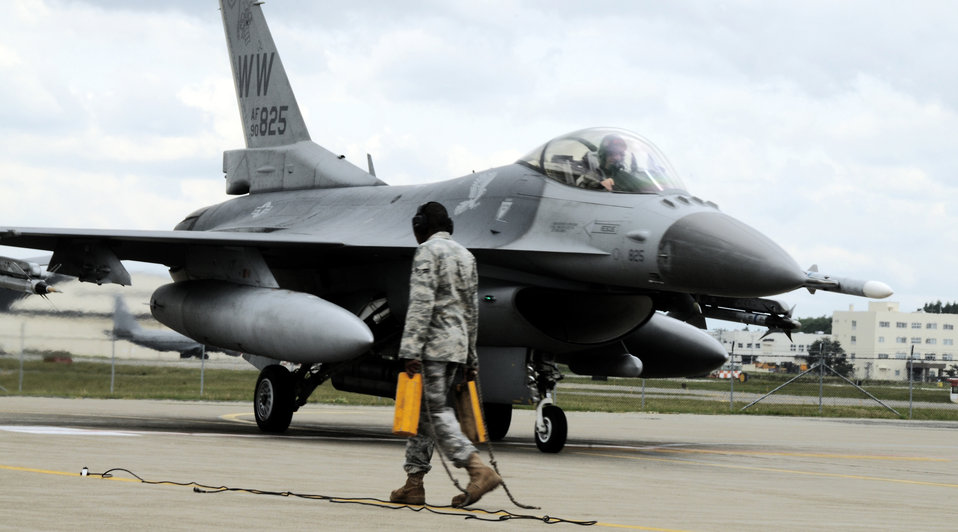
Misawa Airmen complete reconstitution, gear up for exercise

A 14th Fighter Squadron F-16 Fighting Falcon taxies in after completing a mission June 1 at Misawa Air Base, Japan. Airmen of the 14th FS spent the last three months rebuilding skill sets in their primary mission of air-to-air and suppression of enemy air defenses.